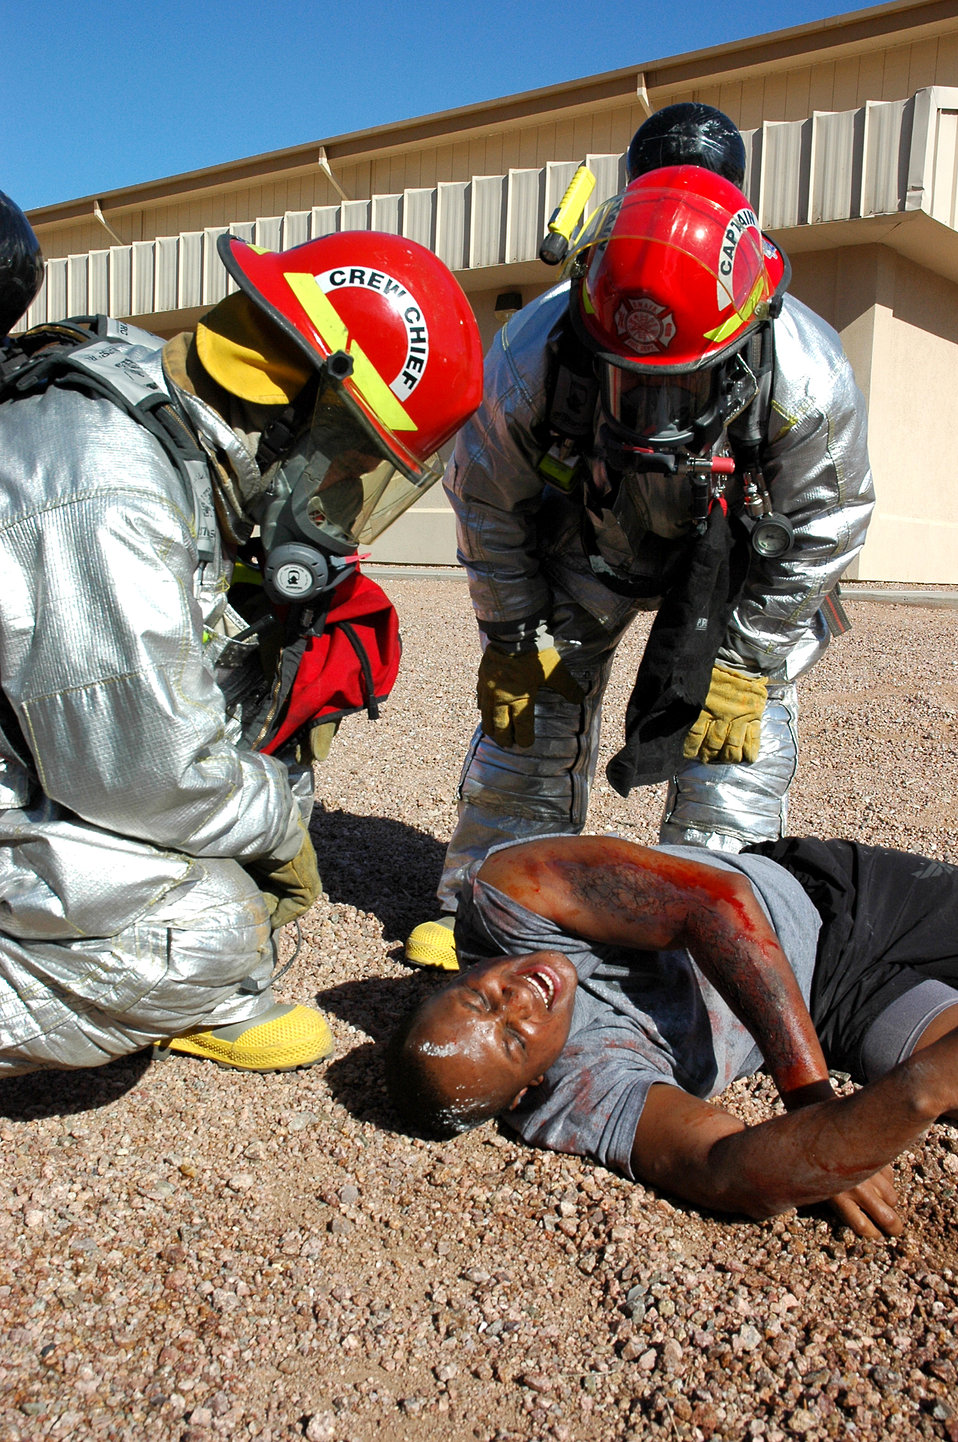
Exercise, exercise, exercise

DAVIS-MONTHAN AIR FORCE BASE, Ariz. (AFPN) -- Staff Sgt. Stephen Leatherman (left) and Jeff Somers help a